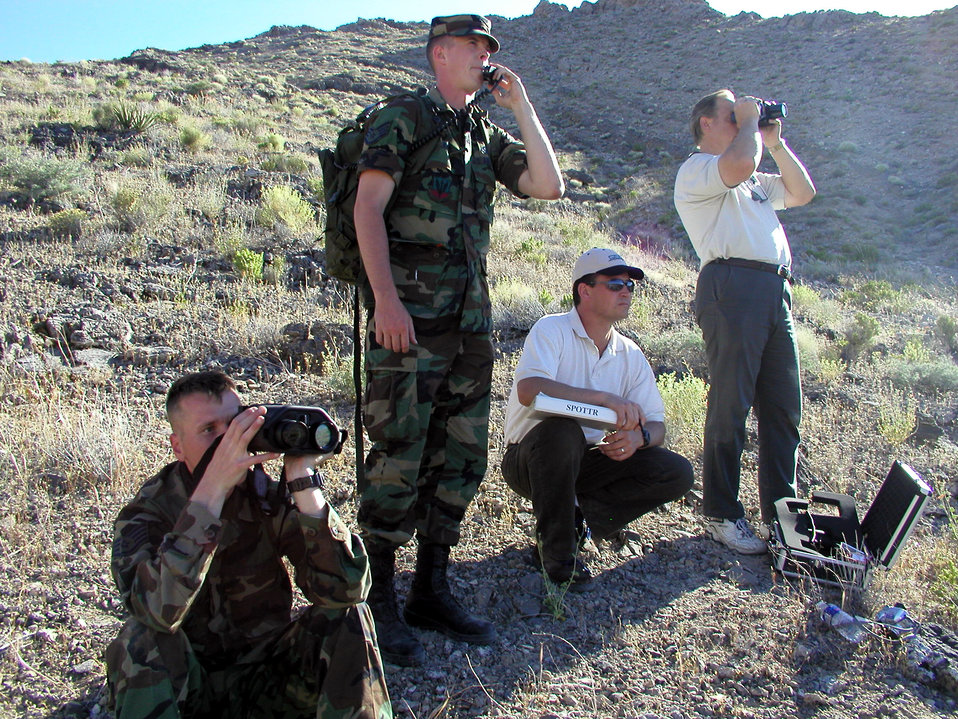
Battlelab technicians develop solutions for warfighters

MOUNTAIN HOME AIR FORCE BASE, Idaho -- (From left) Staff Sgts. Erik Roberts and Eric Jones conduct a field test for the stabilized portable optical target receiver as Neil Huber and John Harwick look on. Battlelab technology often requires field testing before implementation. The Airmen are assigned to the 422nd Training and Evaluation Squadron at Nellis Air Force Base, Nev. Mr. Huber and Mr. Harwick are battlelab technicians.